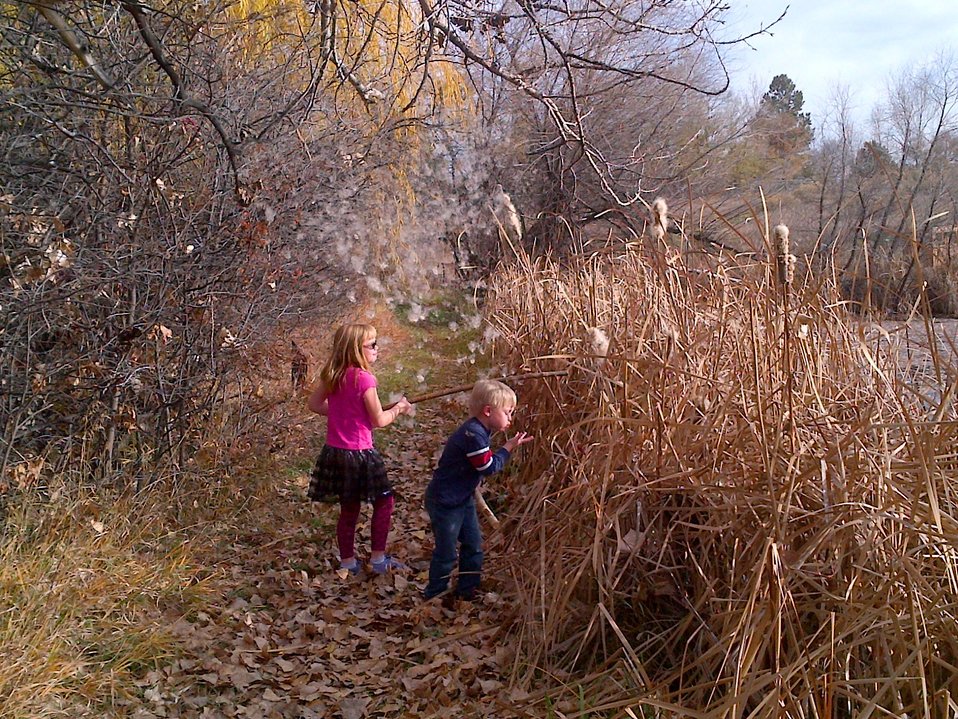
Drop-in Nature Kids